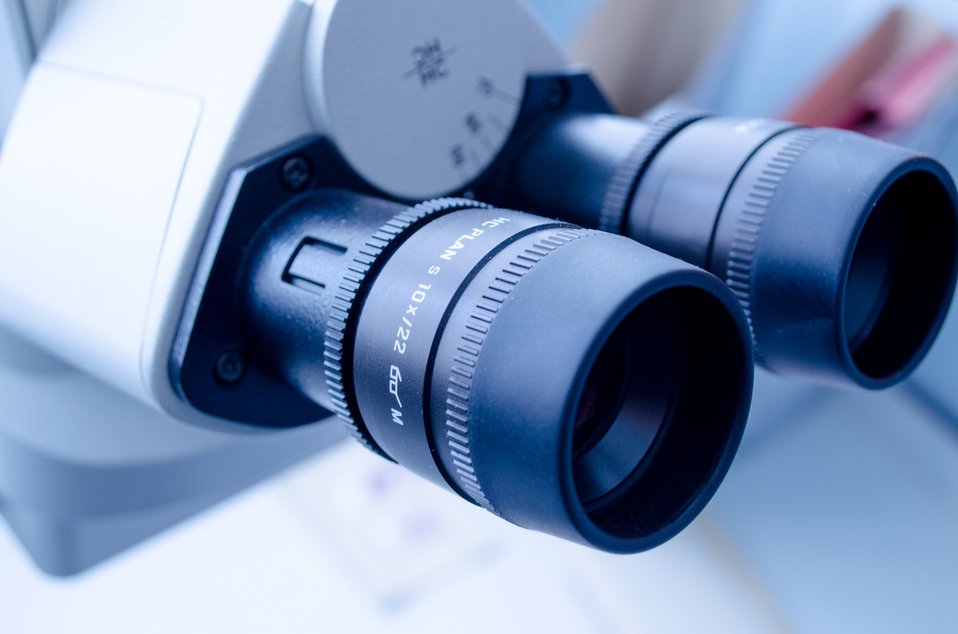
Laboratory microscope.